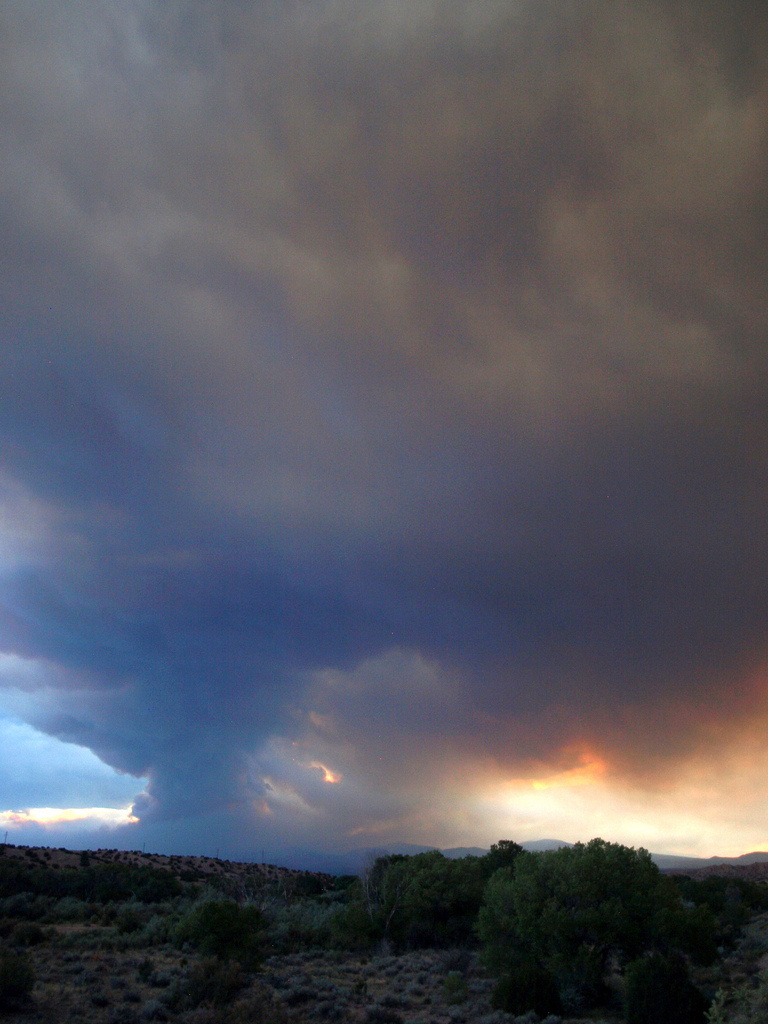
View of plume from Pojoaque, a community between Los Alamos and Santa Fe.

The Las Conchas Fire started on June 26, 2011, it was caused by a fallen tree that caught fire after it came in contact with power lines nearby. The fire had burned over 121,000 acres, including 63 residences. At no time were hazardous materials in danger at Los Alamos National Laboratory. The lab was closed for a week and reopened on July 6th.